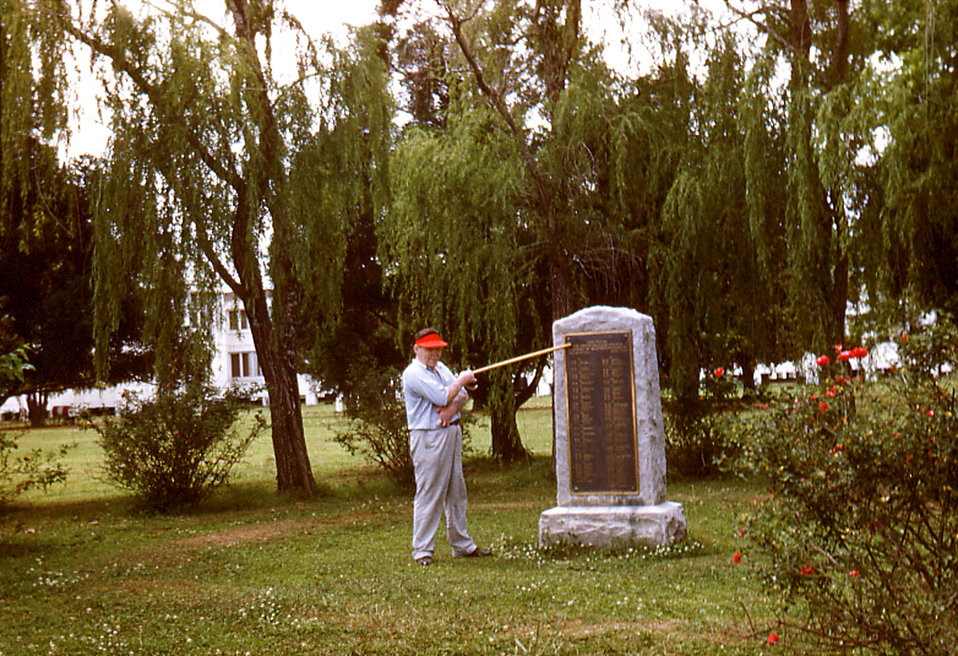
Depicted in this historic image was a Carville, Louisiana, Leprosarium patient as he was pointing his walking stick towards a stone marker paying tribute to those patients that had died while at the hospital. Between 1894 and 1922, there were 125 patient deaths, all of whom were buried on the grounds of the leprosarium. The hospital was a self-contained compound with its own storehouse, laundry, food-processing facilities, patient treatment centers, recreational facilities, and cemetery.